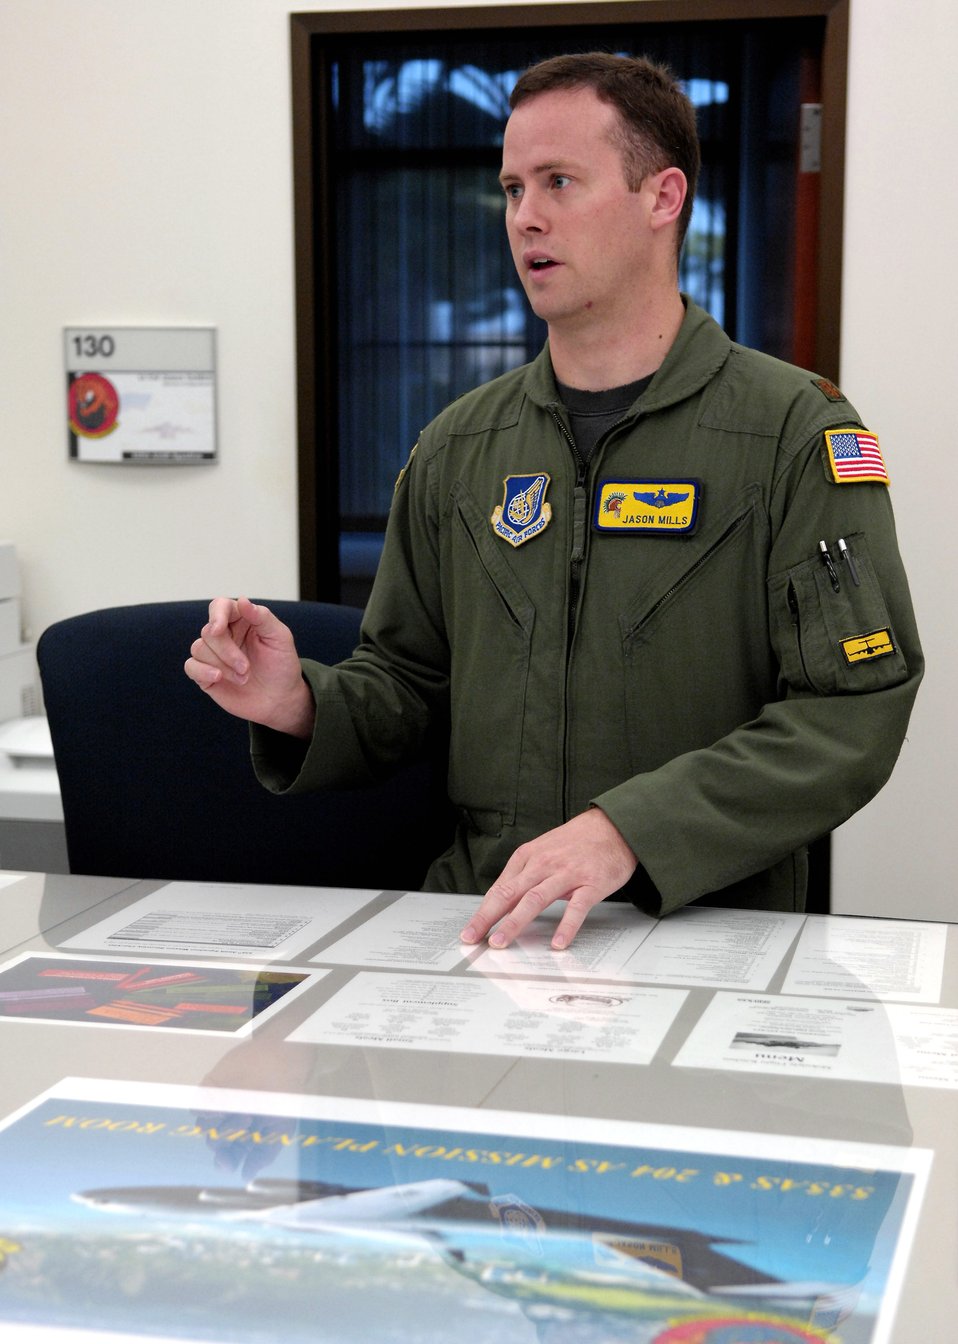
Hickam crew prepares for AMC Rodeo

Maj. Jason Mills conducts a flight briefing prior to departing June 22 on a refueling training mission from Hickam Air Force Base, Hawaii. A KC-135 Stratotanker from the 909th Air Refueling Squadron at Kadena Air Base, Japan, is at Hickam AFB practicing with the C-17 crew from the 535th Airlift Squadron for the 2007 Air Mobility Command Rodeo.